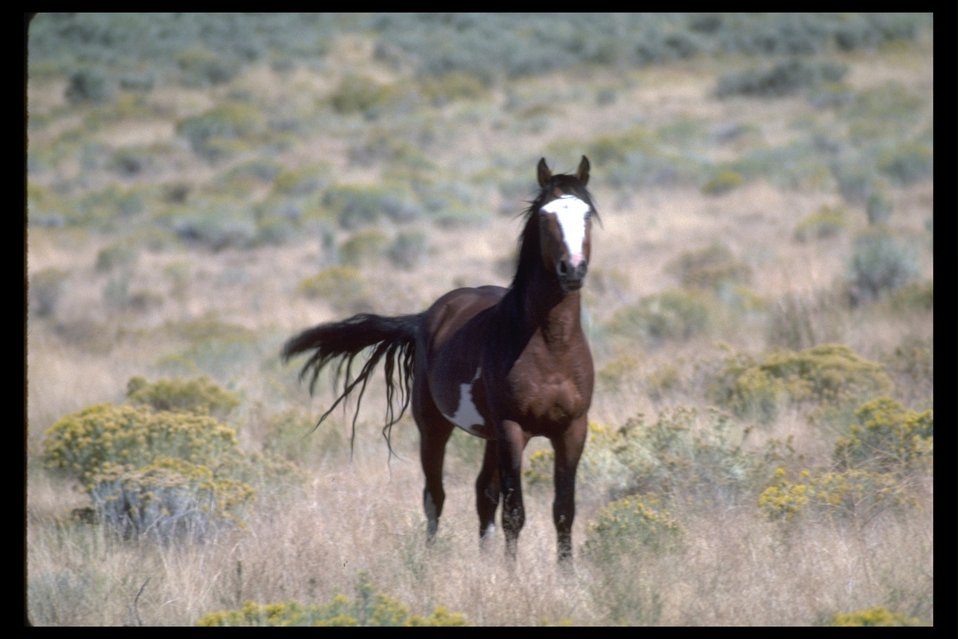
Dominant Stallion on the range in South Steens HMA.